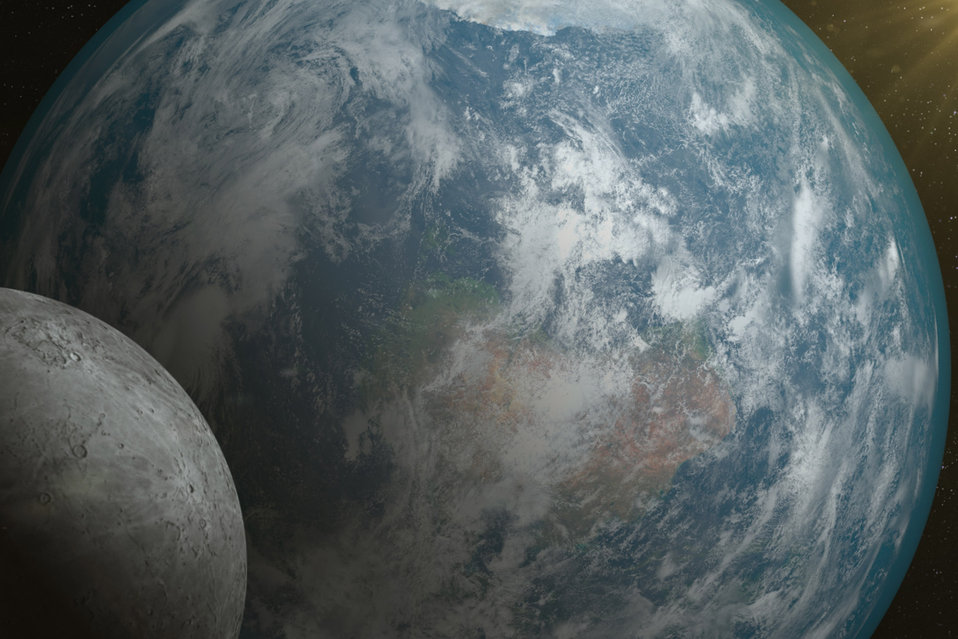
Zoom to the planet and the moon

View of the earth from a satellite.